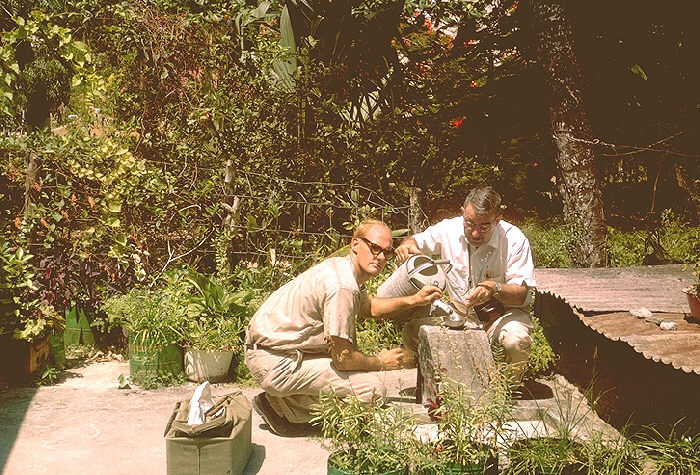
H.D. Pratt and Robert Walsh find Aedes aegypti mosquito larvae in watering can, S. Johns, Virgin Islands.